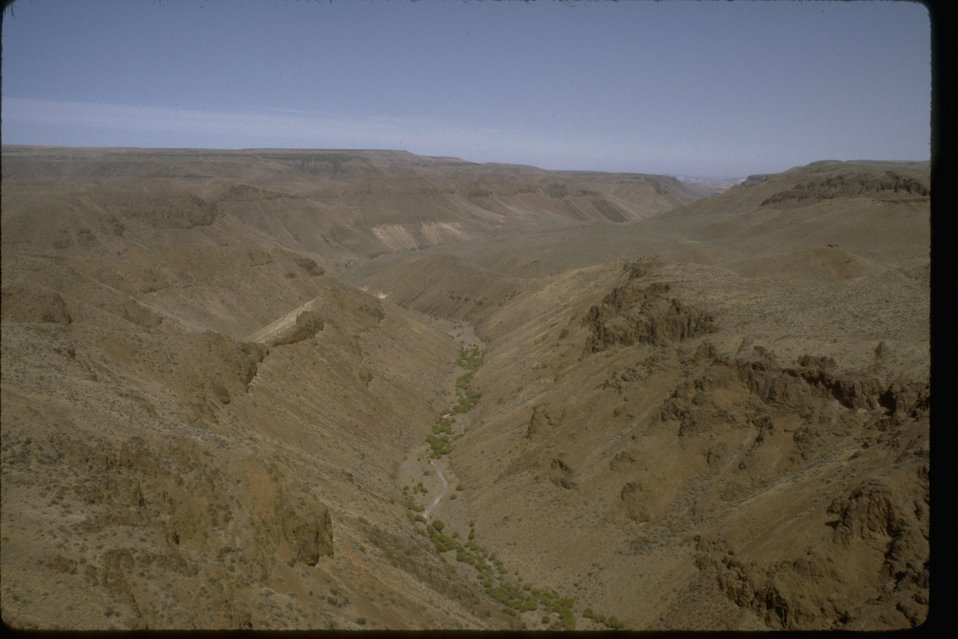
Aerial shot of Cottonwood Creek. OR 3-32